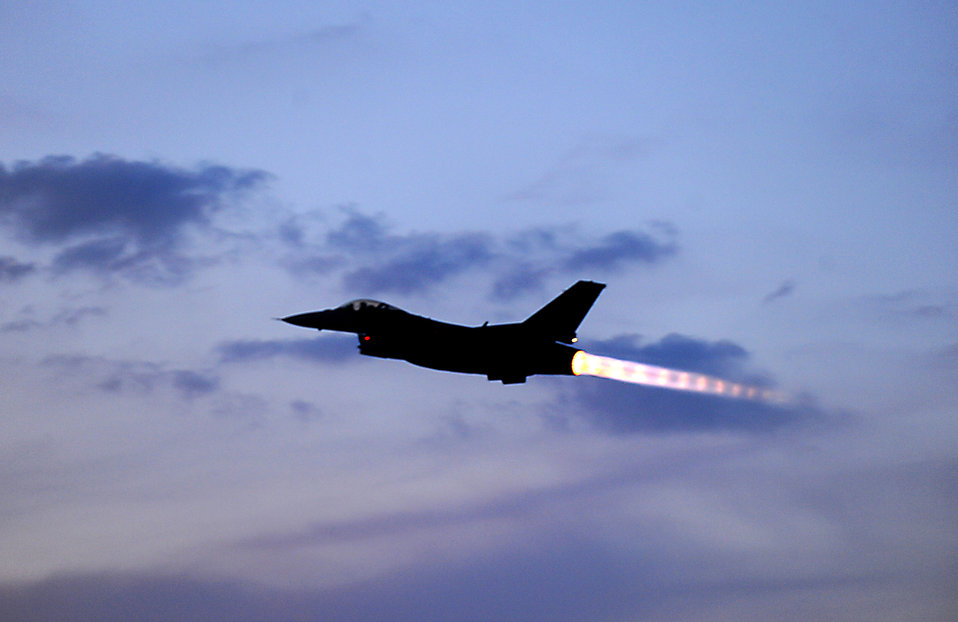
Heading off into the night

An F-16 Fighting Falcon from the 480th Fighter Squadron at Spangdahlem Air Base, Germany, departs May 2, 2011, for the unit's Air Expeditionary Force deployment to Iraq in support of Operation New Dawn.